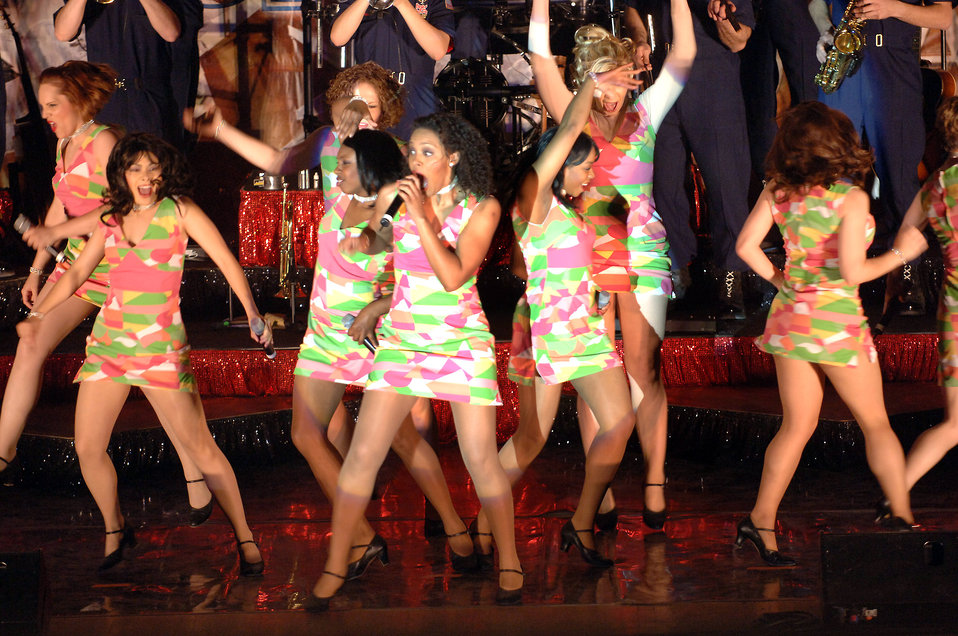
Tops In Blue put on a show for Airmen, Soldiers at Balad

Members of Tops In Blue 2007 perform for servicemembers during a performance April 28 at Balad Air Base, Iraq. Thirty eight active-duty Airmen with the Air Force's premier expeditionary entertainers set out in mid-April to kick off their 2007 tour singing and dancing their way through the area of responsibility. They will tour Southwest Asia forthree weeks, and continue their 2007 tour through February 2008.